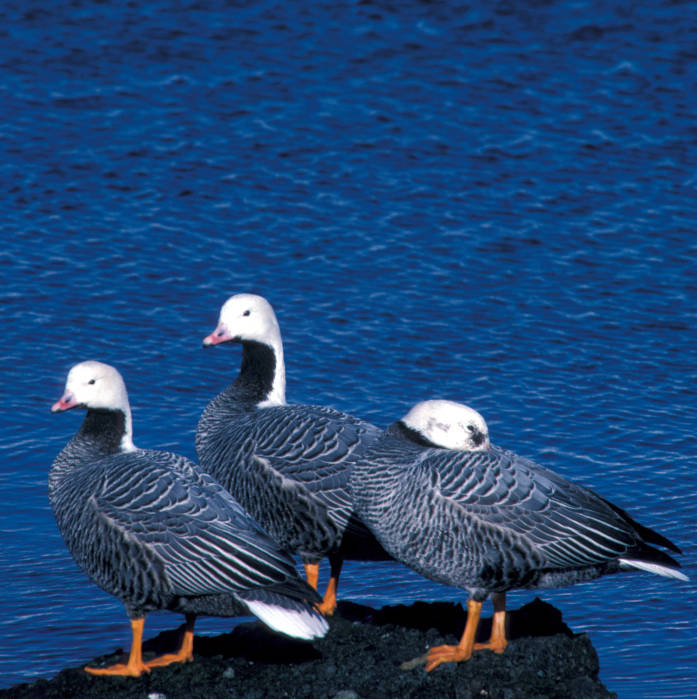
emperor geese

Alaska Maritime National Wildlife Refuge